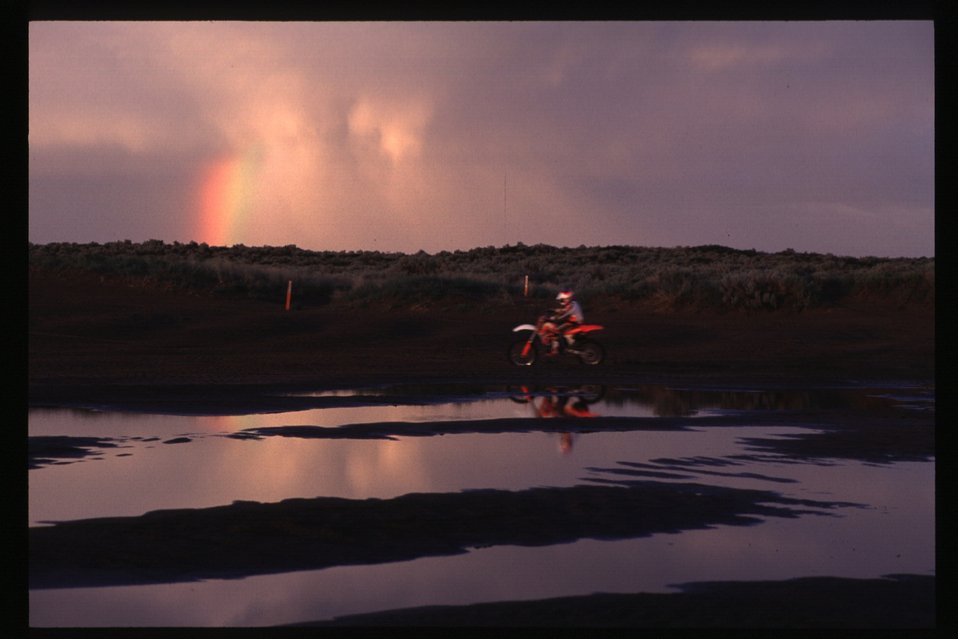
Recreation St Anthony Sand Dunes Off Highway Vehicles Idaho Falls Field Office USRD Upper Snake River District